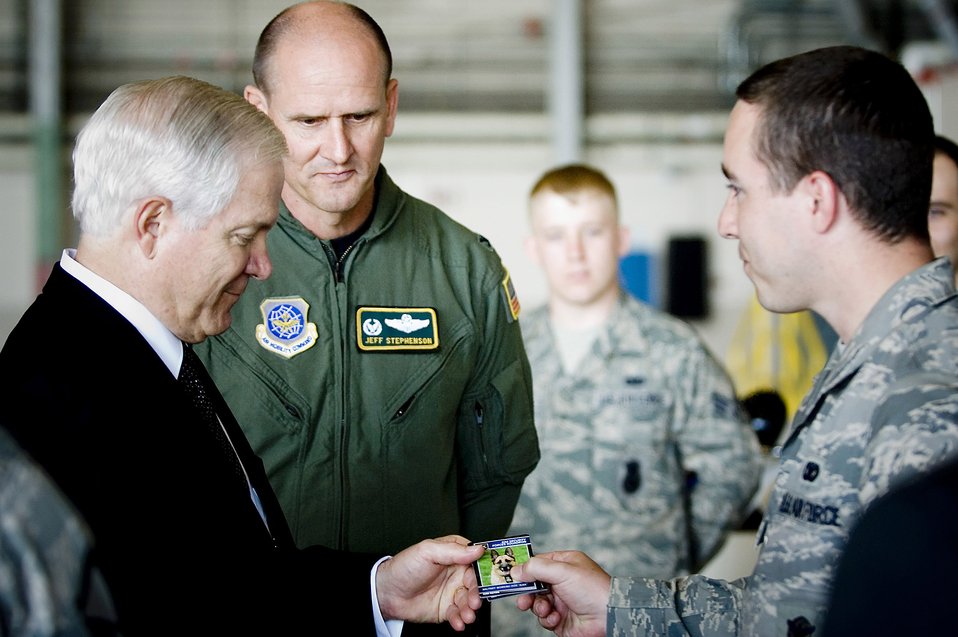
Secretary of Defense Robert M. Gates visit to McChord

Senior Airman Brian LeCloux presents a military working dog information card to Secretary of Defense Robert M. Gates, during a static display presentation here July 7. Airman LeCloux is assigned to the 62nd Security Forces Squadron.